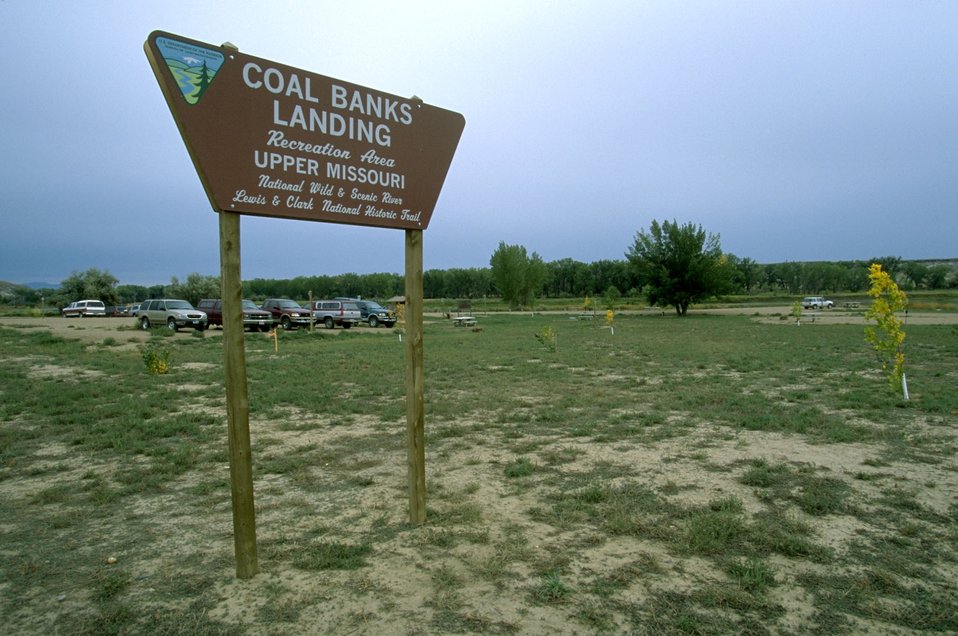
Coal Banks Landing sign near Upper Missouri River